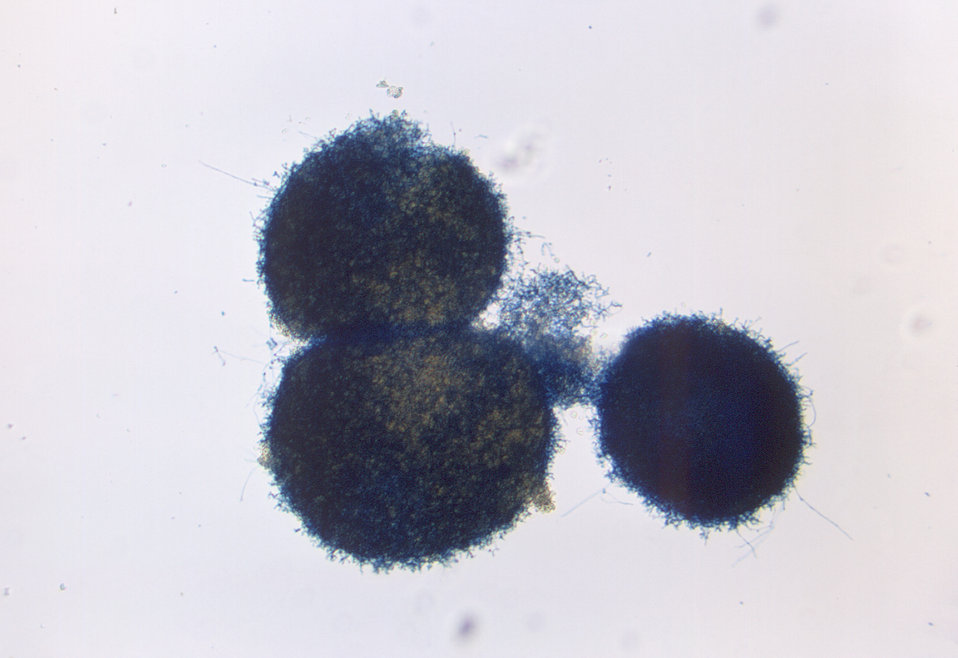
Under a very low magnification of only 25X, this photomicrograph revealed some of the ultrastructural morphology displayed by three Gymnoascus demonbreunii cleistothecia, including the tightly-woven hyphae of this fungus, which gives these structures a 'fuzzy' appearance.